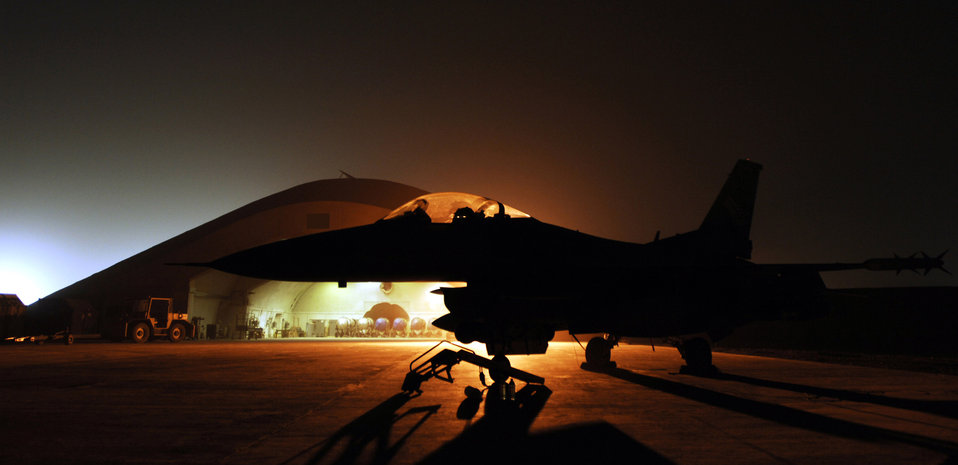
Lurking in the shadows

An F-16 Fighting Falcon waits in front of a hardened aircraft shelter Sept. 24 at Joint Base Balad, Iraq. The F-16 is deployed to the 332nd Expeditionary Fighter Squadron from the Oklahoma Air National Guard's 138th Fighter Wing. The F-16s arrived Sept. 18 to support Operation Iraq Freedom.